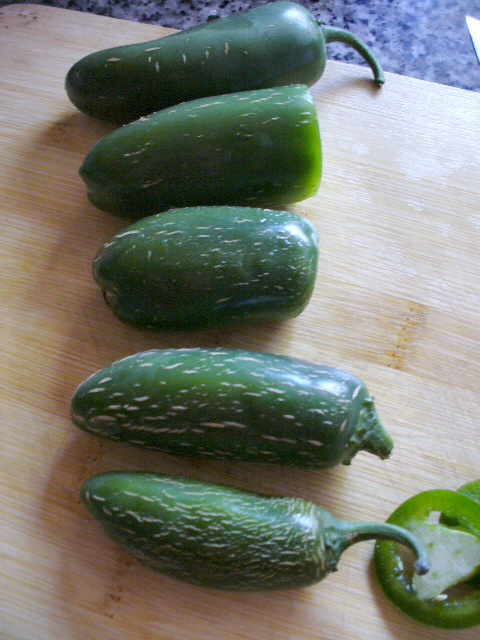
Five Jalapeño peppers.